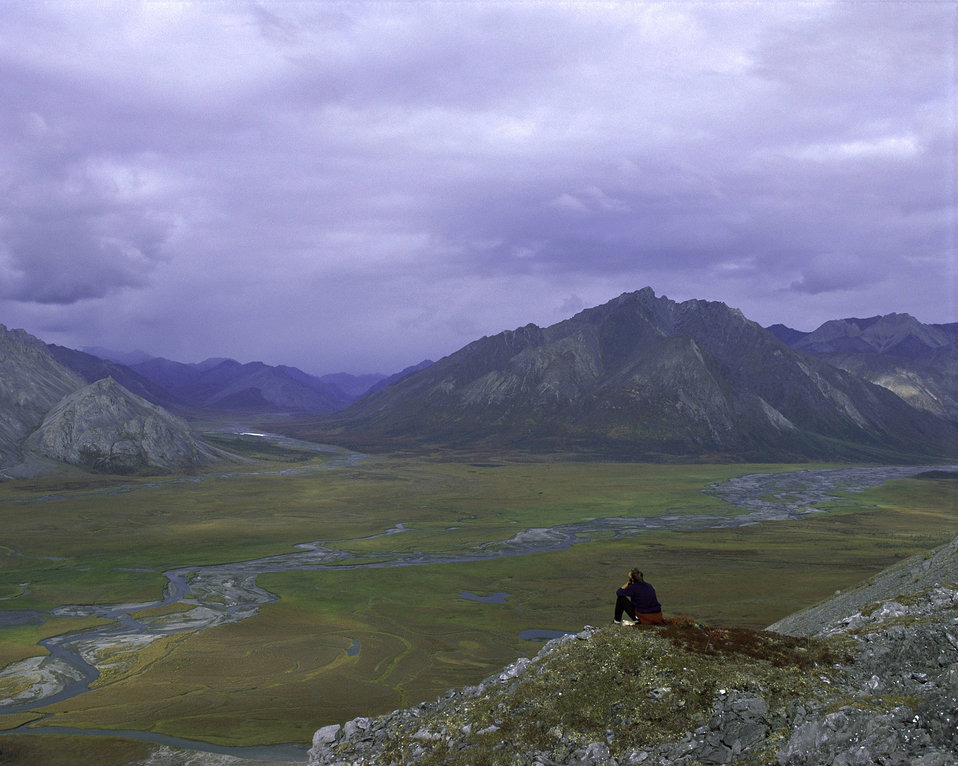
Person on rock above Arctic National Wildlife Refuge

Photo credit: USFWS/Steve Chase

The thawing of frozen organic material stored in tundra soils will release huge amounts of GHGs such as CO2 and methane into the atmosphere, contributing to climate change